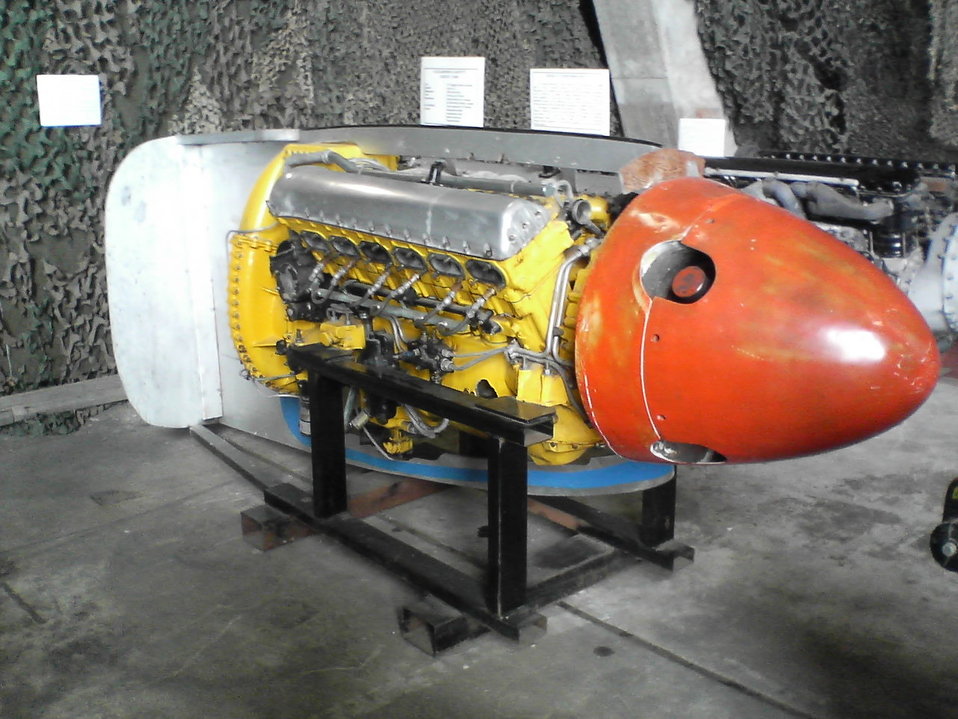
Rolls Royce Merlin engine on display at the en:Tillamook Air Museum. Taken July 01st 2007 by Robert Wenstrand.